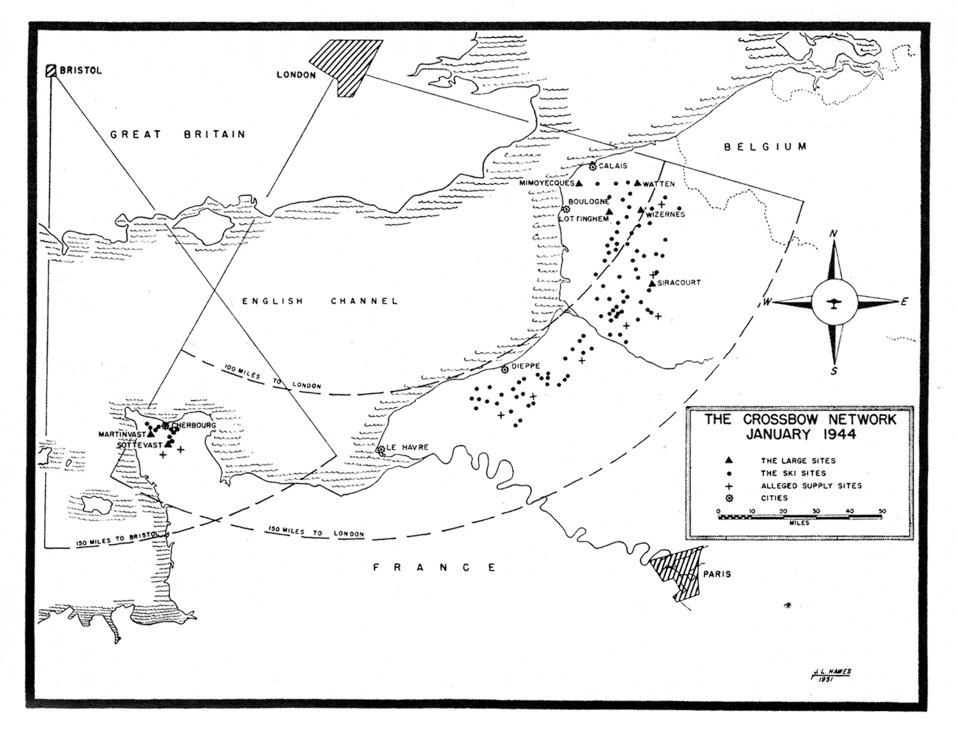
Warfare flight works behind the scenes

A World War II map shows the two areas where the Germans were setting up their secret